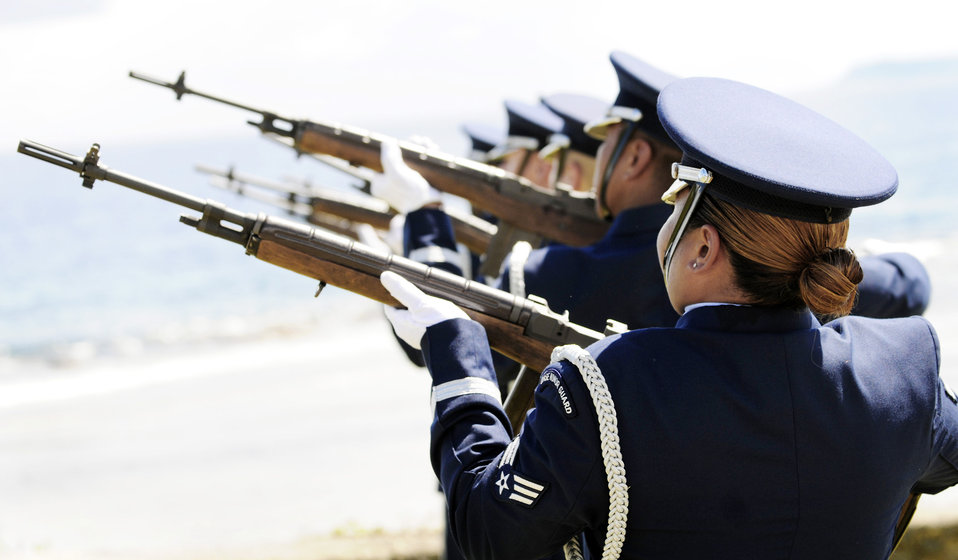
RAIDR 21 memorial

Airmen from the 36th Wing Honor Guard at Andersen Air Force Base, Guam, conduct a 21-gun salute July 20 during the RAIDR 21 Memorial Unveiling Ceremony at the Governor's Complex at Adelup Point in Hagatna, Guam. Family, friends and co-workers of the RAIDR 21 aircrew along with residents of the local Guam community honored the fallen aircrew with the ceremony where a memorial dedicated to the Airmen was unveiled. The aircrew died when their B-52 Stratofortress crashed off the coast of Guam July 21, 2008.